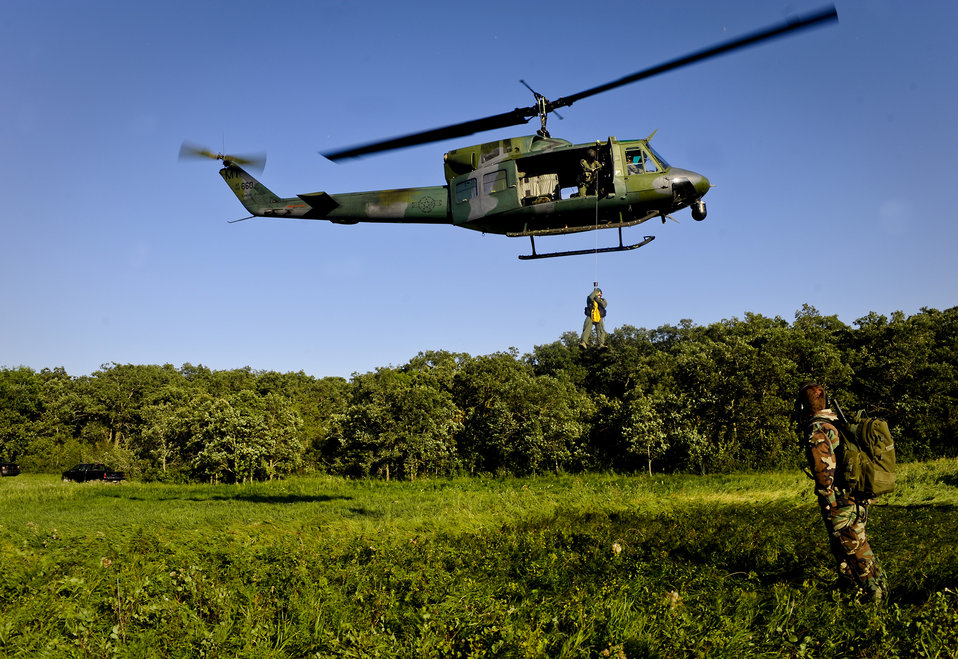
Going up

Aircrew members of the 54th Helicopter Squadron practice extraction techniques as a team member is hoisted to a UH-1N Iroquois during a two-day survival, evasion, resistance and escape refresher course Aug. 25, 2010, in the Turtle Mountains, N.D. The course, led by base SERE instructor Staff Sgt. Brett Sipe, focused only on the evasion and survival portions of the training.